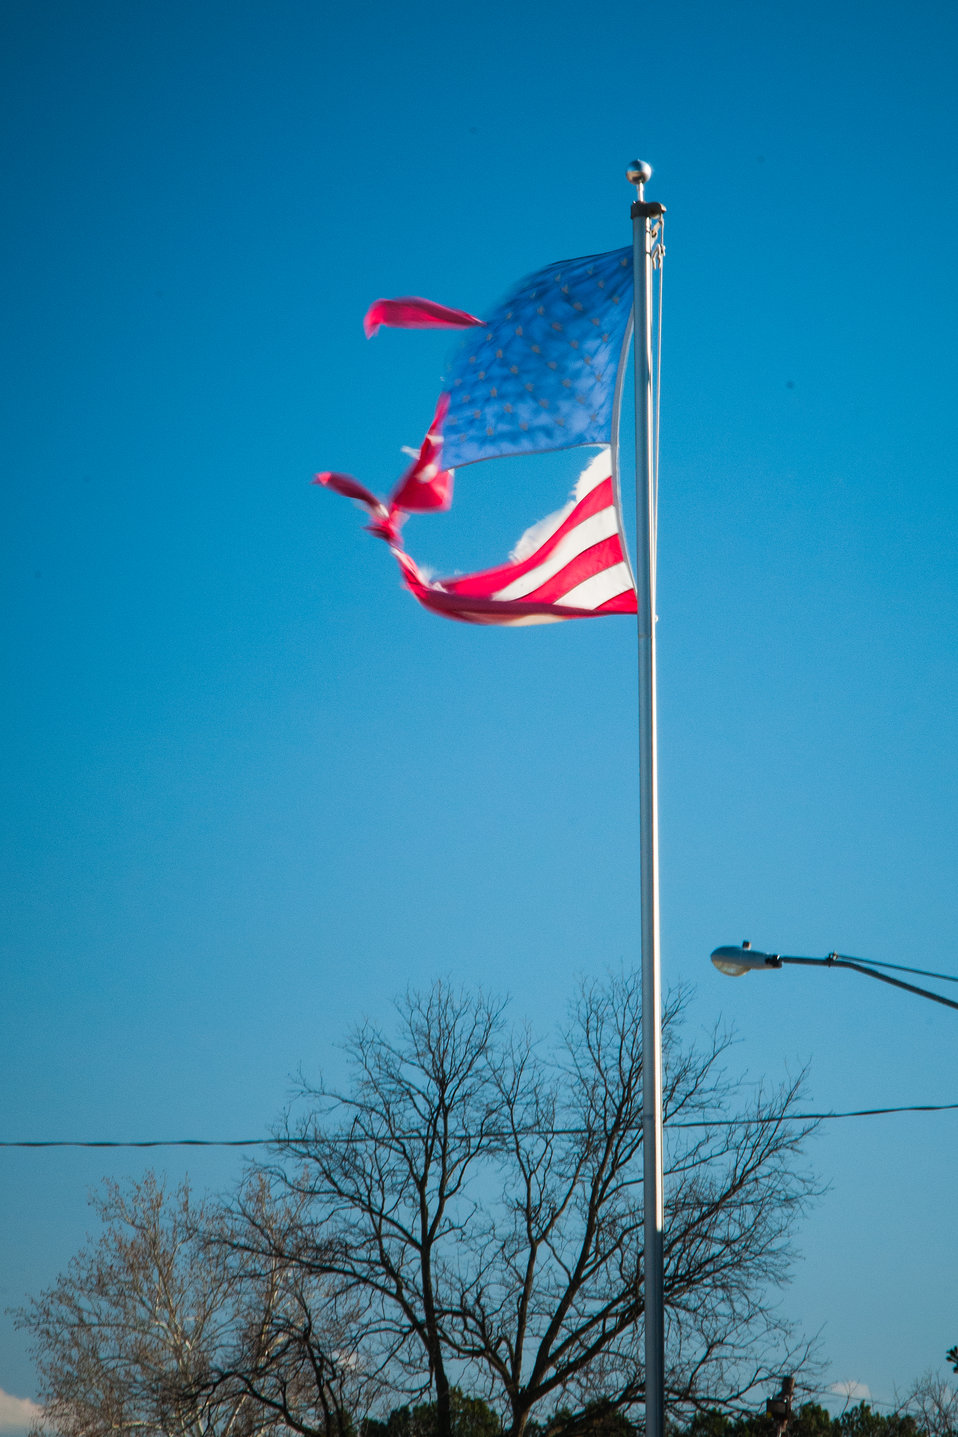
Flags wave in the breeze in Forest City, AR on Mar. 5, 2013. The East Arkansas Enterprise Community, Inc. in Forrest City, AR is one of 42 community-based organizations located in high poverty areas in the U.S. to benefit from the Arkansas Delta Seeds of Change (ADSOC) Initiative. The U.S. Department of Agriculture (USDA) in partnership with Heifer International (an International organization whose mission is to work with communities to end hunger and poverty and care for the Earth) and various for-profit and non-profit organizations have put in motion the “Seeds of Change Implementation Plan” to use sustainable agriculture to build food systems in the Arkansas Delta. The program has evolved into the ADSOC Initiative.